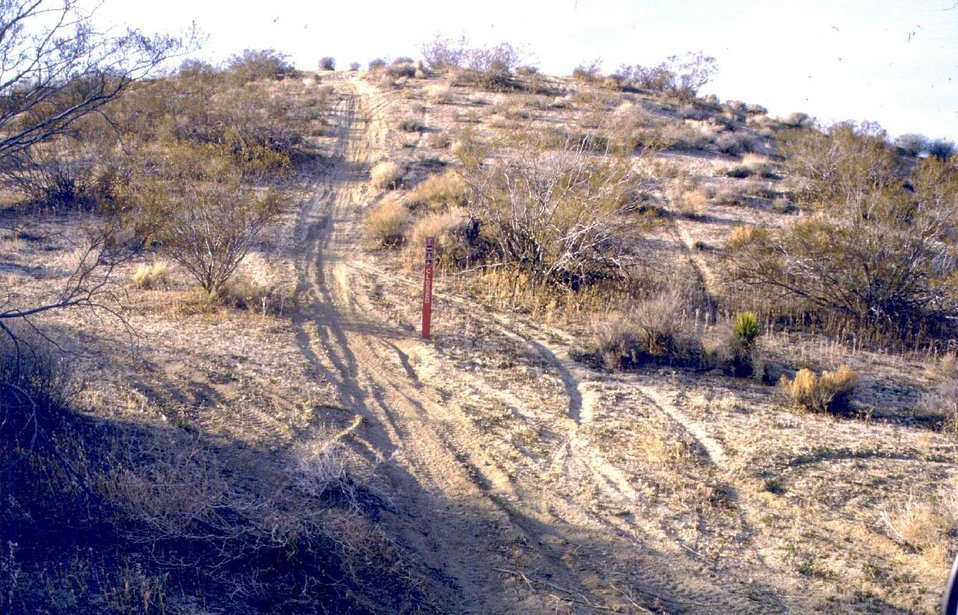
Active trespass route being established around red route closed sign.